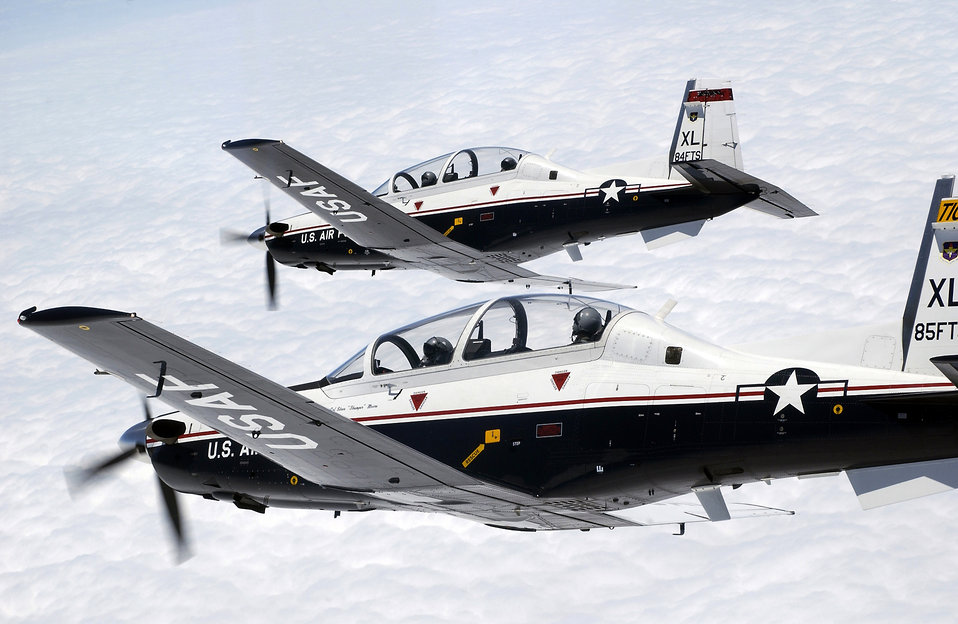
New trainer

OVER LAUGHLIN AIR FORCE BASE, Texas -- Two T-6A Texan IIs fly in formation over the base here May 19. The T-6A Texan II is replacing the T-37 Tweet as the primary trainer for Air Force pilots.